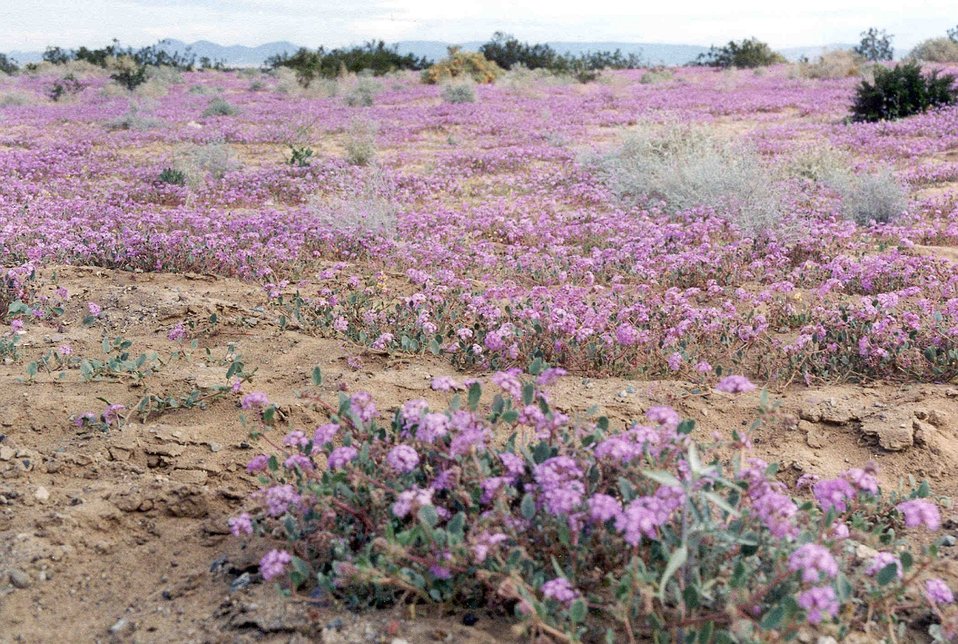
Purple desert verbena covers landscape in the desert.